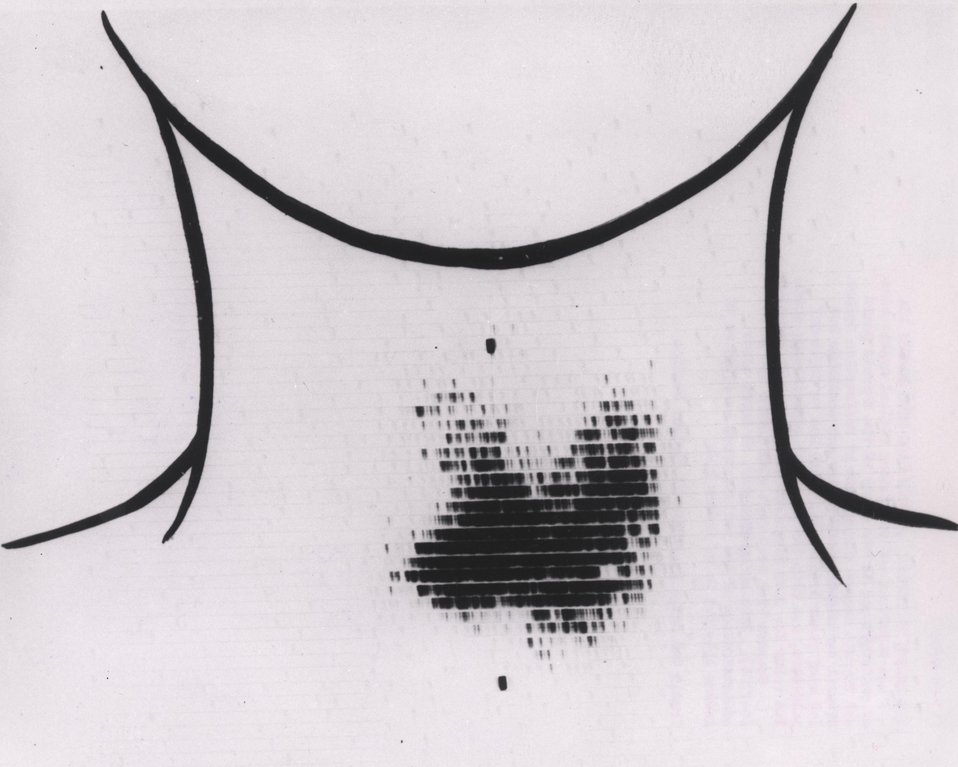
An important and continuing medical application of radioisotopes is the study of the thyroid gland and thyroid cancer through use of radioactive iodine. c. 1966